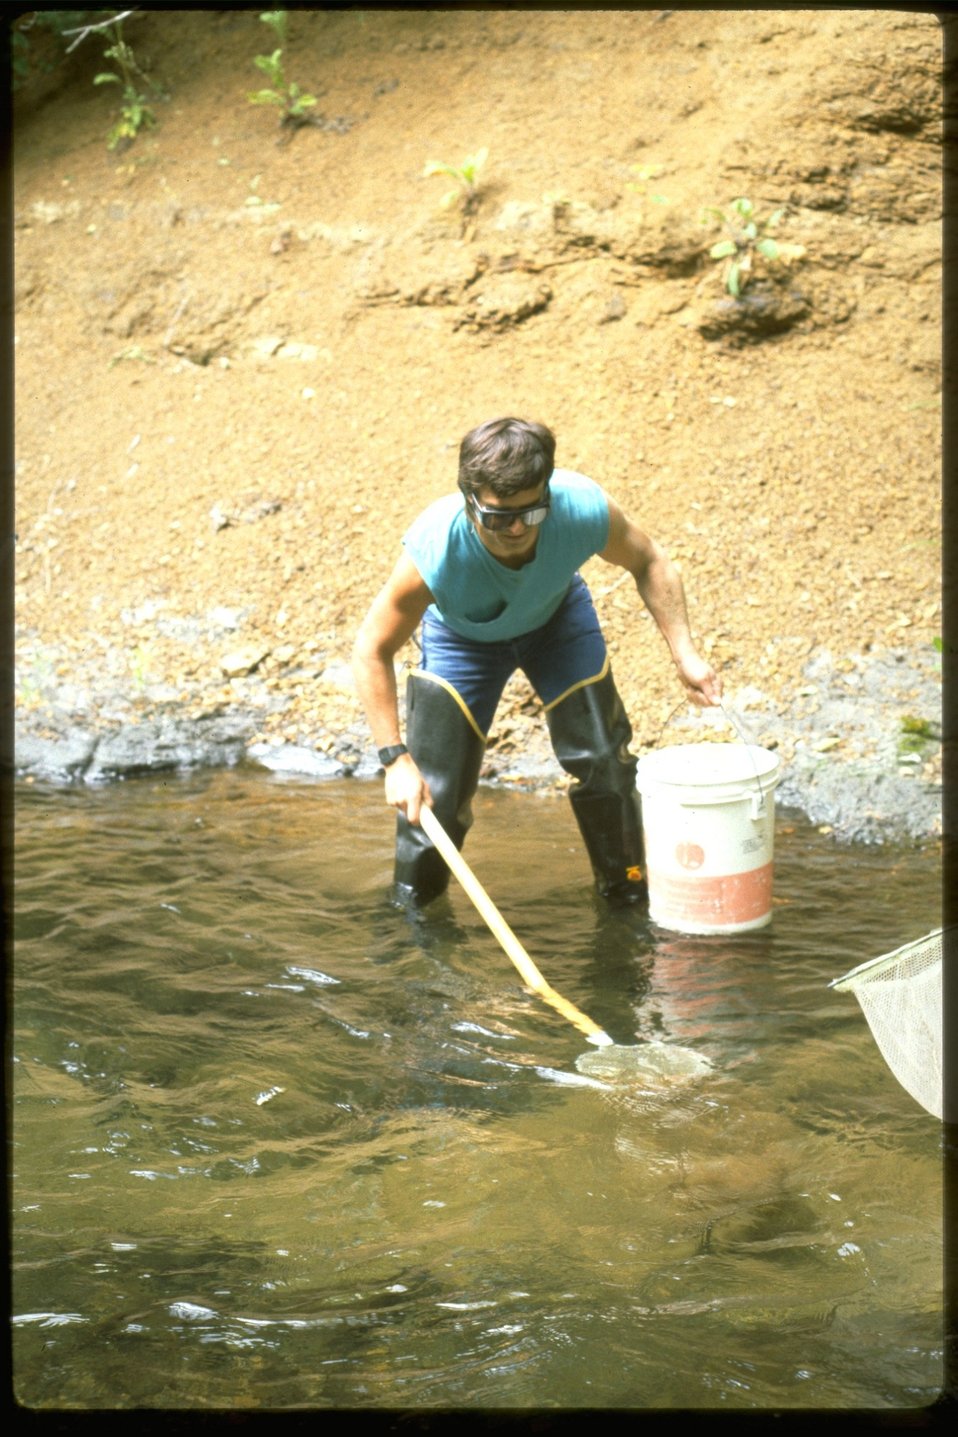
Fish shocking.